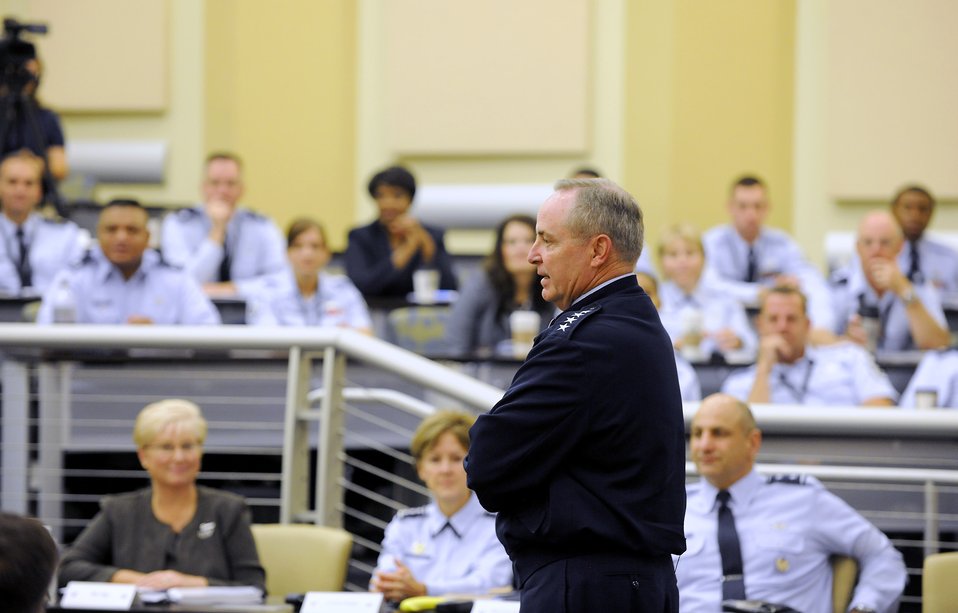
Caring for People

Air Force Chief of Staff Gen. Mark A. Welsh III makes remarks at the Caring for People Forum at Joint Base Andrews, Md., on Sept. 26, 2012. This is the fourth annual forum which provides strategies for commanders, leaders and care professionals to help Airmen and their families.